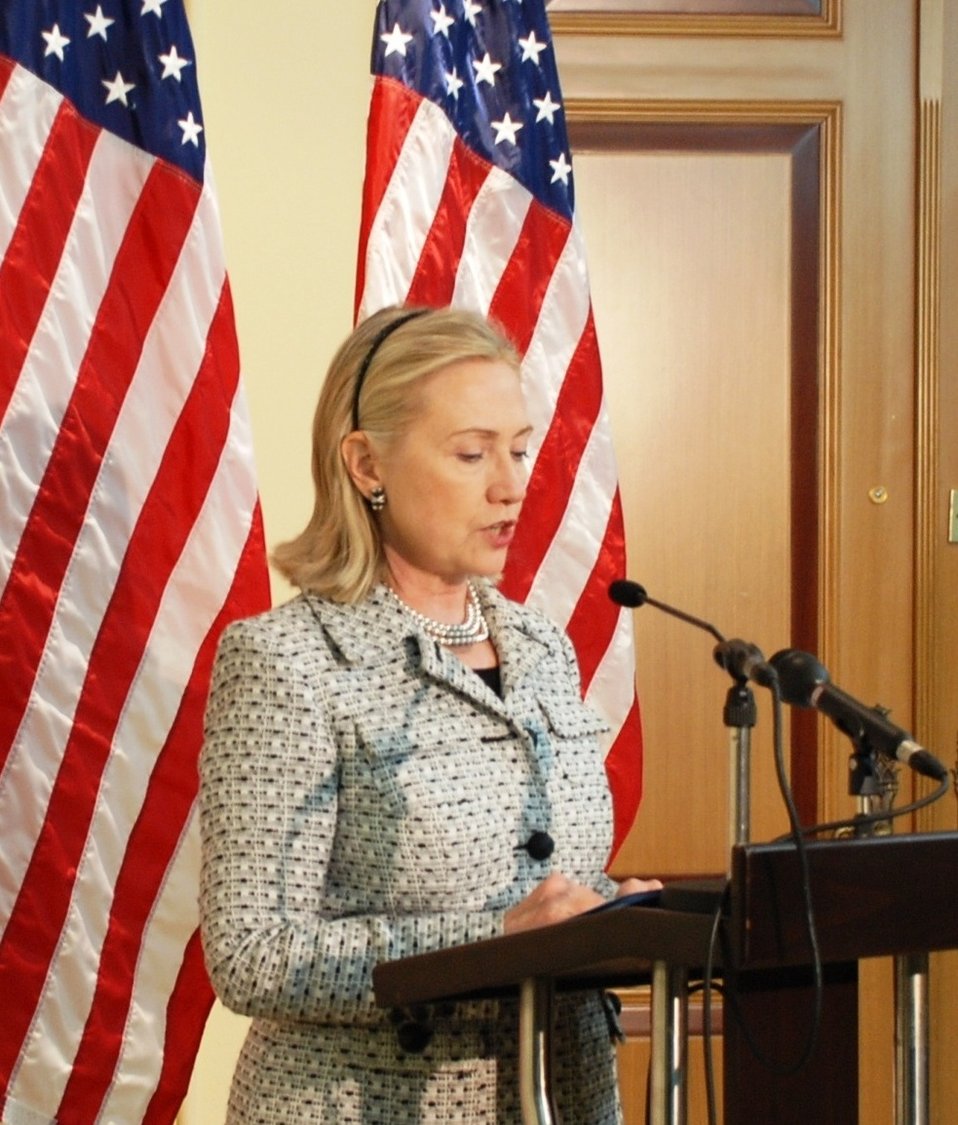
Secretary Clinton Addresses Reporters After Fourth Libya Contact Group Meeting

U.S. Secretary of State Hillary Rodham Clinton addresses reporters after participating in the fourth Libya Contact Group Meeting at the Çırağan Palace in Istanbul, Turkey, on July 15, 2011.